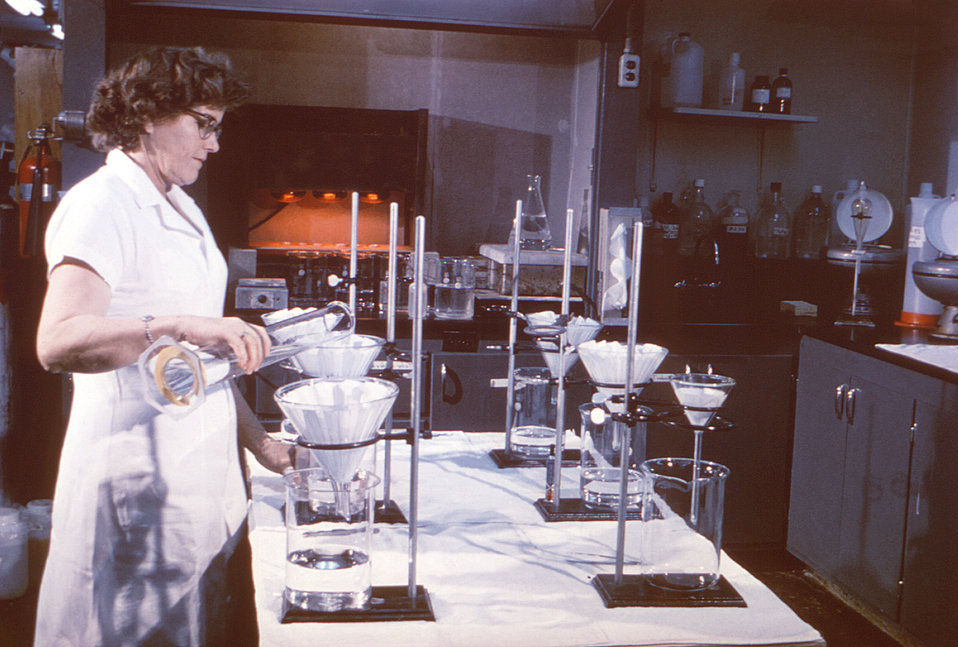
This historic 1963 image depicted a laboratory technician as she was in the process of filtering water samples prior to carrying out a radiochemical analysis.